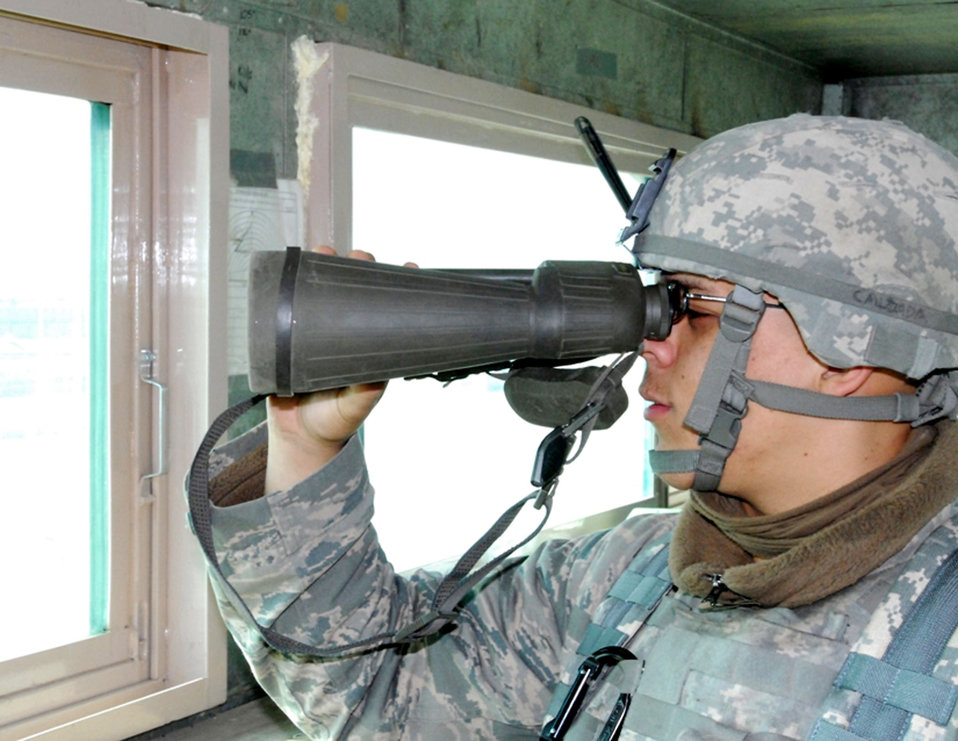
Forces work jointly for security at Bagram

Airman Aaron Calzada watches a group of locals near the perimeter at an entry control point Oct. 29, 2009, at Bagram Airfield, Afghanistan. Airman Calzada is assigned to the 455th Expeditionary Security Forces Squadron deployed from Holloman Air Force Base, N.M. He is a native of Lancaster, Calif.